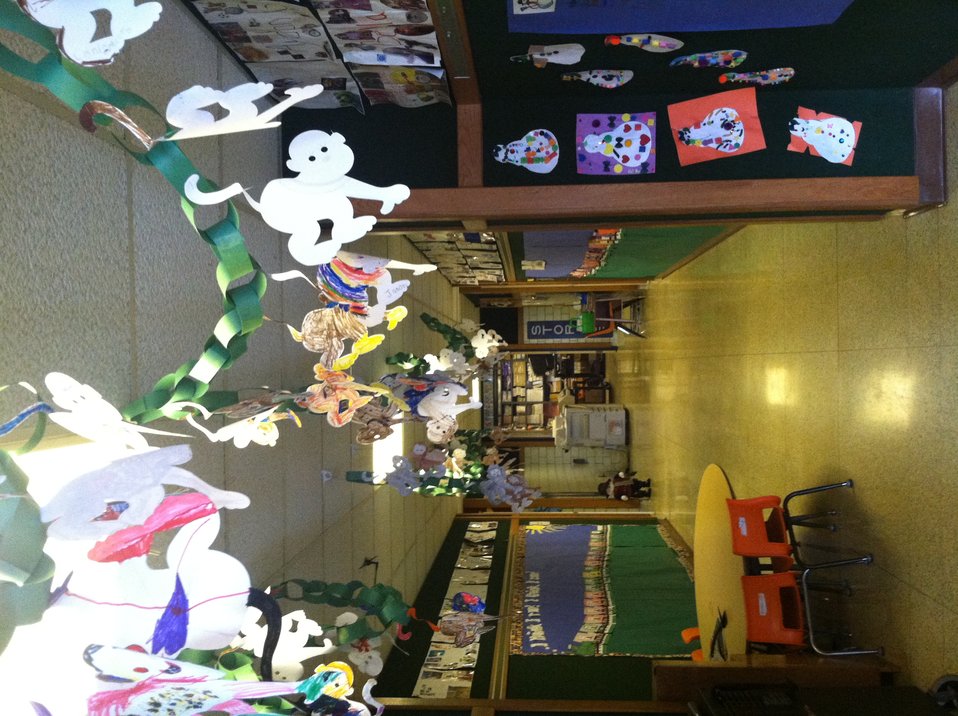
Poster Contest NDFW 2013

Alverton, Penn., Southmoreland Primary Center held a 'Jungle-themed' poster contest during its NDFW 2013 events.